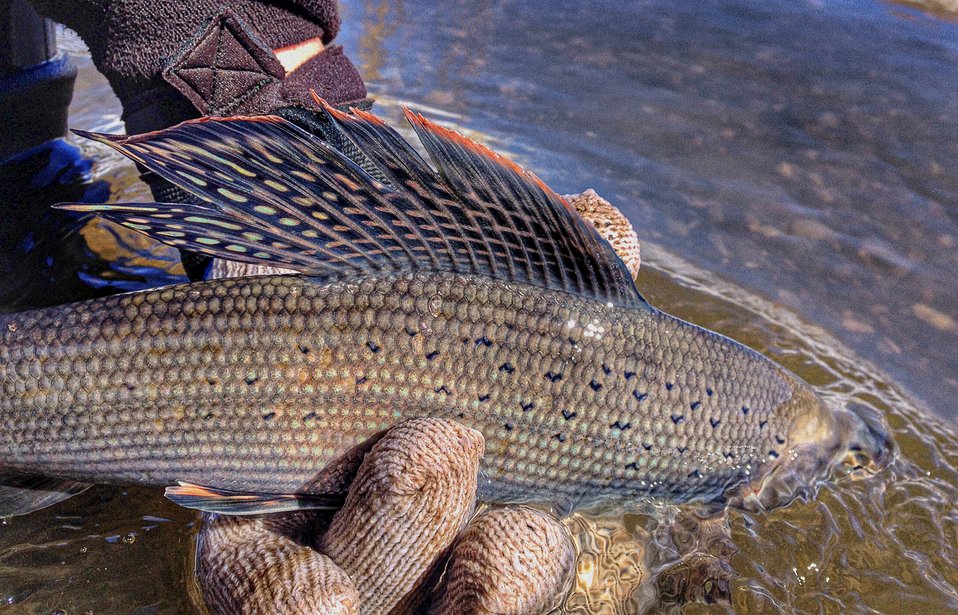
The first of the season...

This handsome fellow was the first Arctic Grayling to be collected in our fish trap this season (23 April 2014).

The trap, located on Red Rock Creek, Red Rock Lakes National Wildlife Refuge, Montana, is one of the sampling and monitoring methods utilized by Montana Fish and Wildlife Conservation Office personnel to assess fish population trends.

The Fish and Aquatic Conservation Division of the US Fish and Wildlife Service has been assisting with monitoring this unique population of Arctic Grayling for nearly 2 decades.